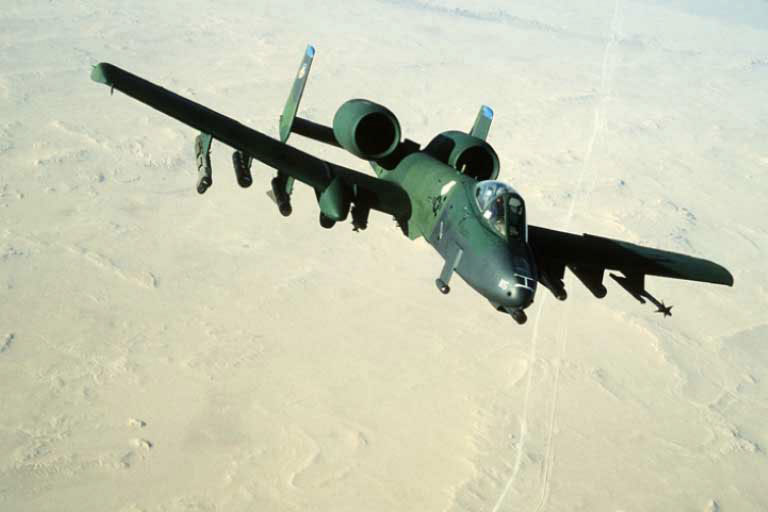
A-10

1990's -- A-10